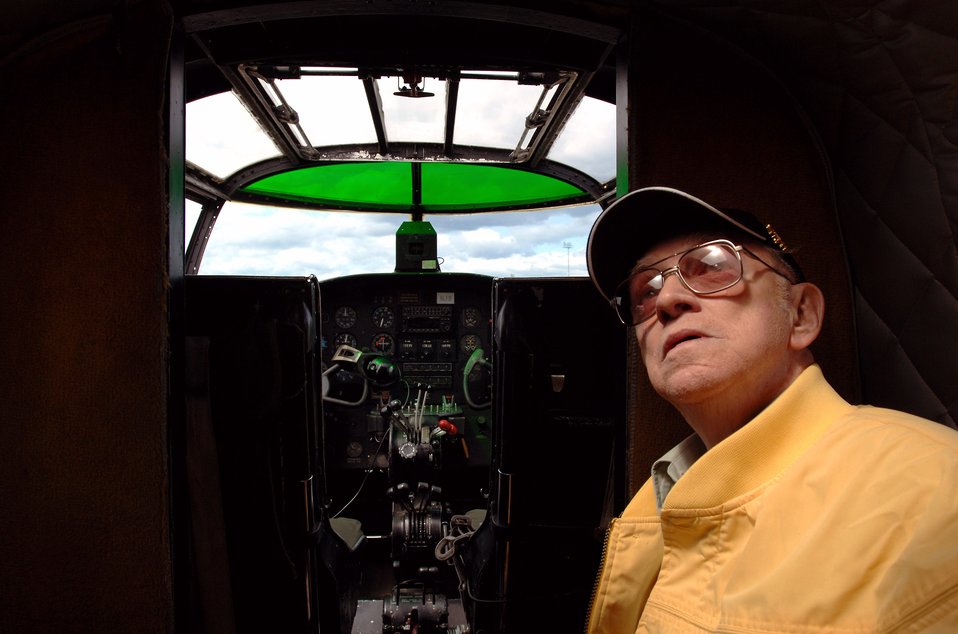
Army Air Corps veteran talks about war experience at air show

World War II veteran Robert McNally stands inside a B-25 Mitchell Aug. 19 at Pease Air National Guard Base at Portsmouth, N.H. The B-25, called the